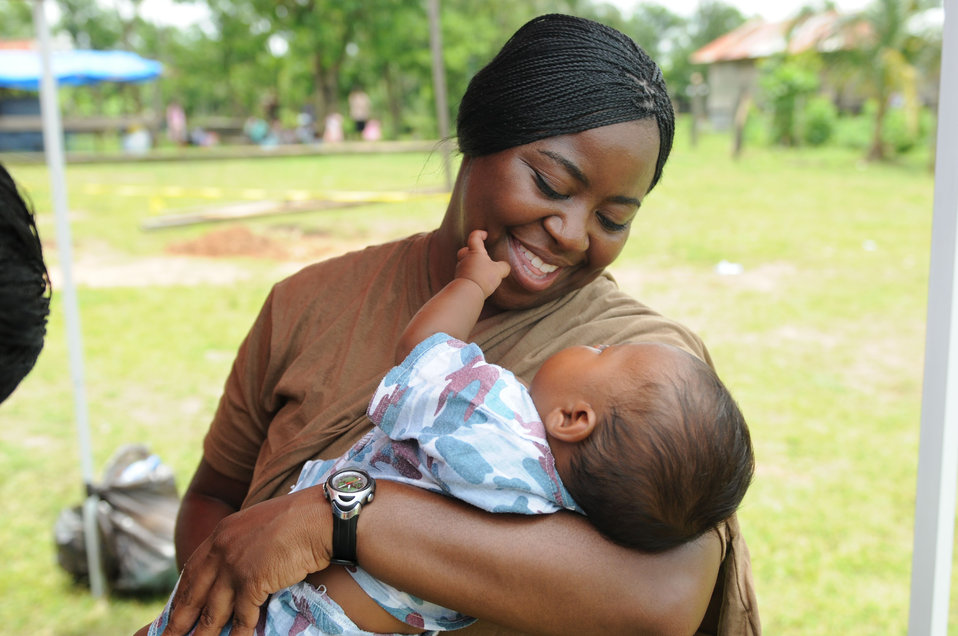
This image depicts a U.S. Navy nurse taking care of a very young patient while in Betania, Nicaragua during operation Continuing Promise (CP) 2008.